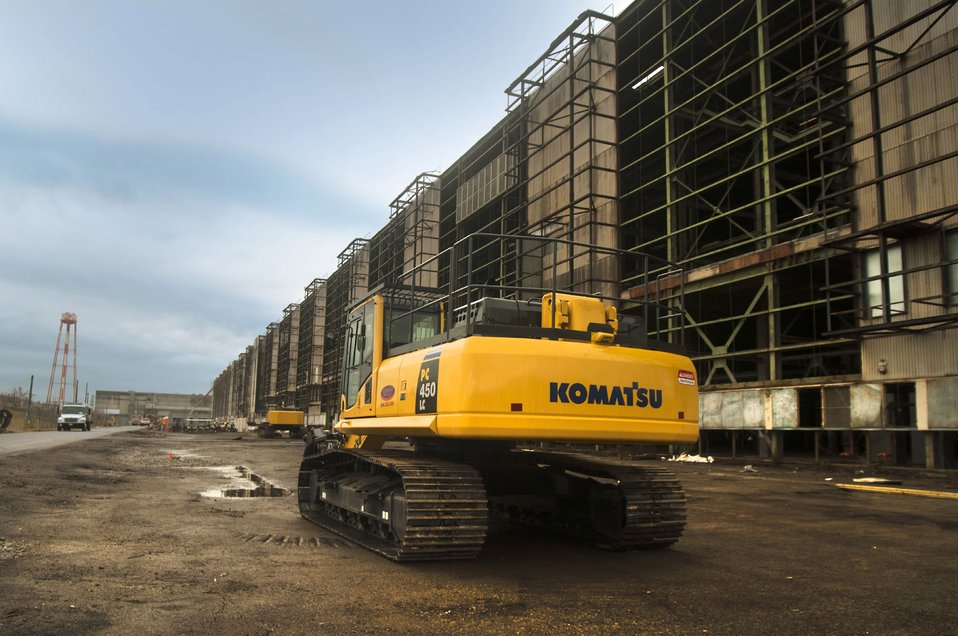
Oak Ridge K-33 Demolition

As of February 2011, Recovery Act workers had removed most of the siding from the 1.4 million-square-foot K-33 Building in preparation for its demolition.